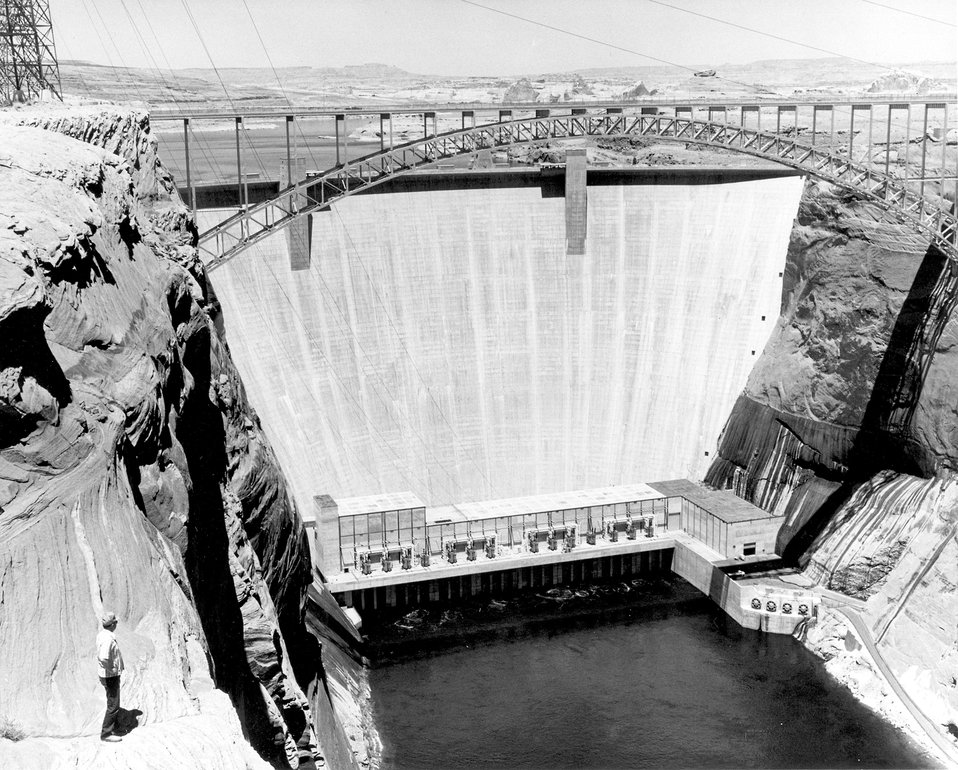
View looking upstream showing Glen Canyon Dam and the Glen Canyon Bridge. c. 1978